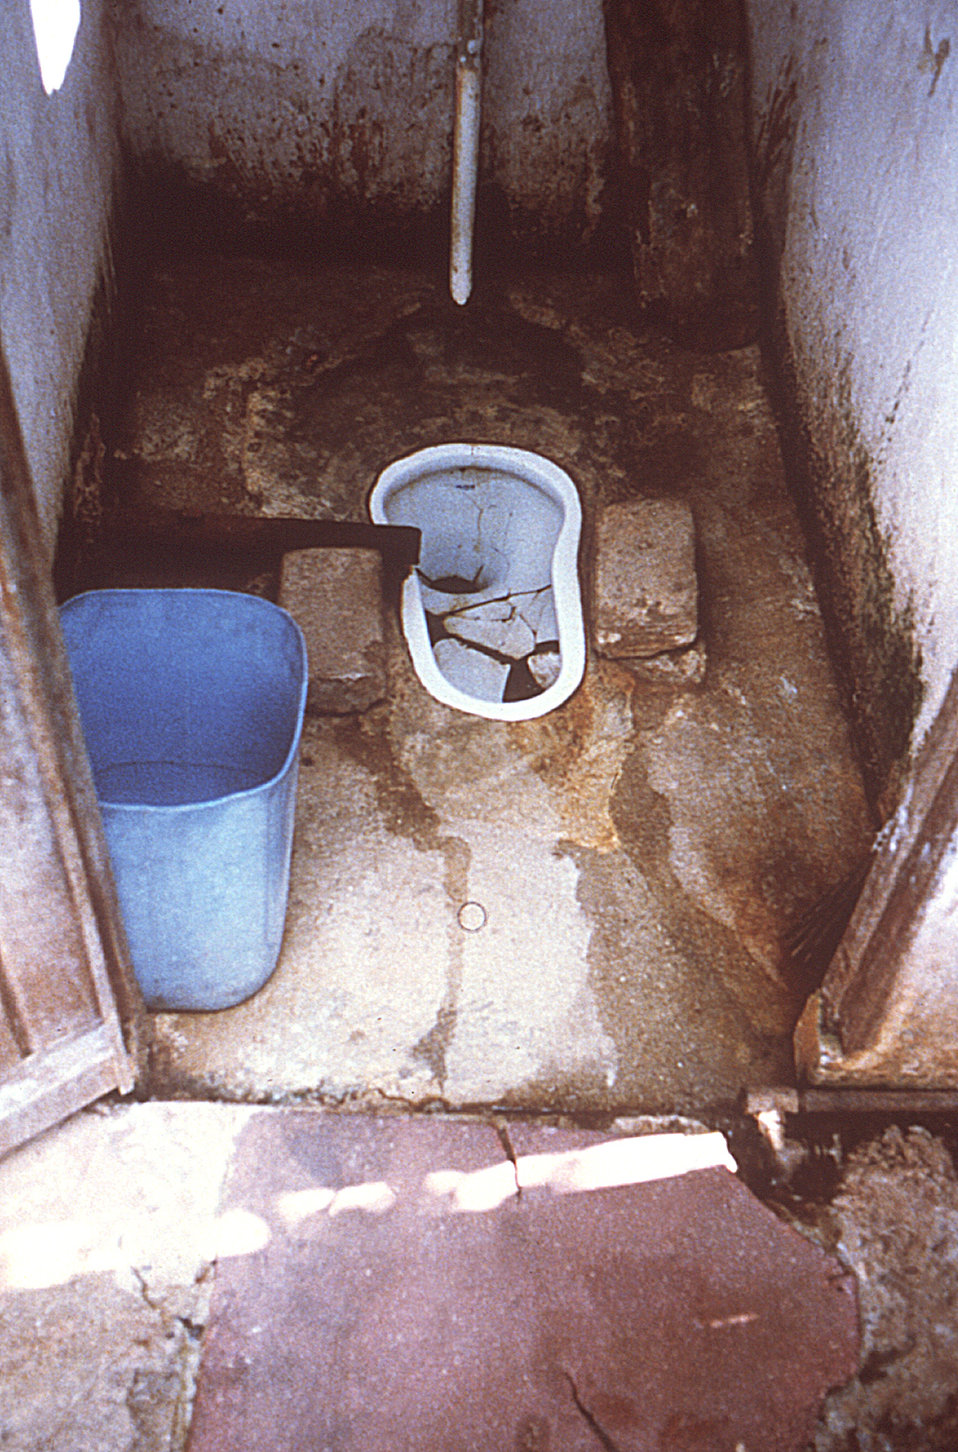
These were conditions inside the water closet of the index case residence during a Cite' Roche Bois, Mauritius typhoid outbreak.